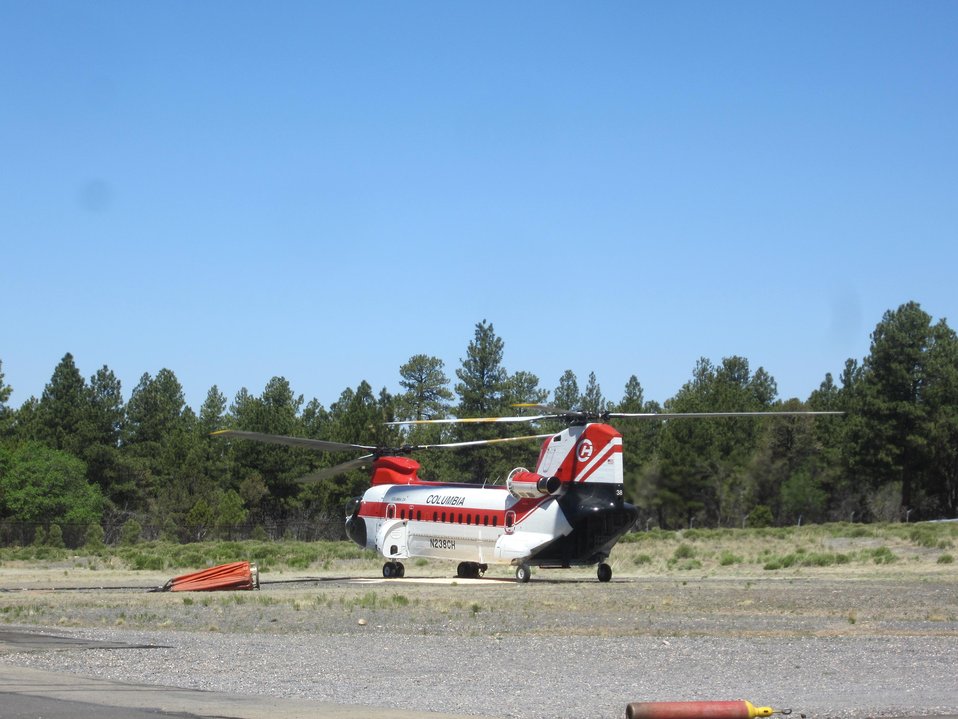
Type 1 Boeing Chinook Columbia 234 Helicopter prepares for another hard day of fire suppression at the Galahad Fire on Jun. 1, 2014. The Galahad Fire on the North Rim on the Walla Valley Peninsula in the Grand Canyon National Park in Arizona began on May 23, 2014 from lightening and has consumed 2, 950 acres to date and is 30% contained.